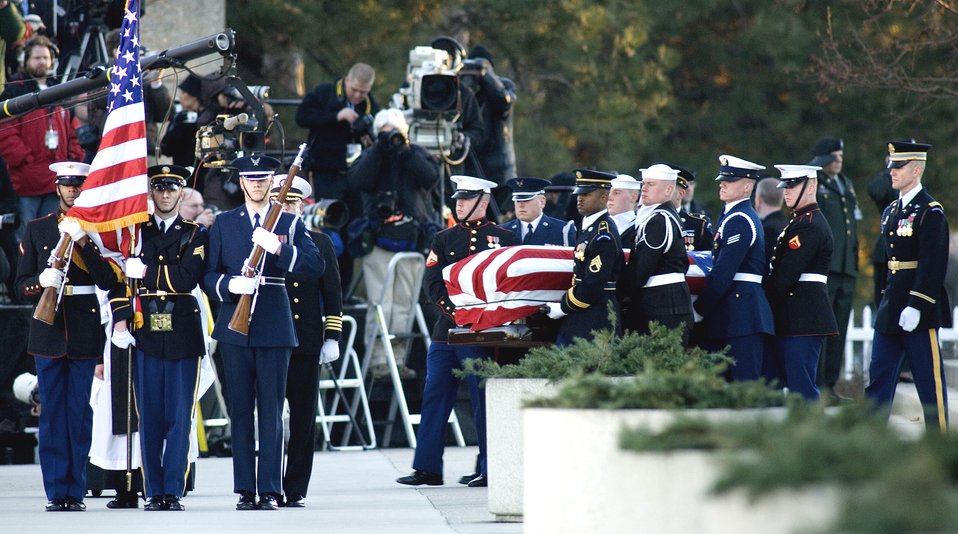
Honor Guard gives President Ford final honors

Armed Forces Honor Guard and body bearers carry President Gerald R. Ford for his internment at the Gerald R. Ford Presidential Library and Museum Jan. 3 in Grand Rapids, Mich.